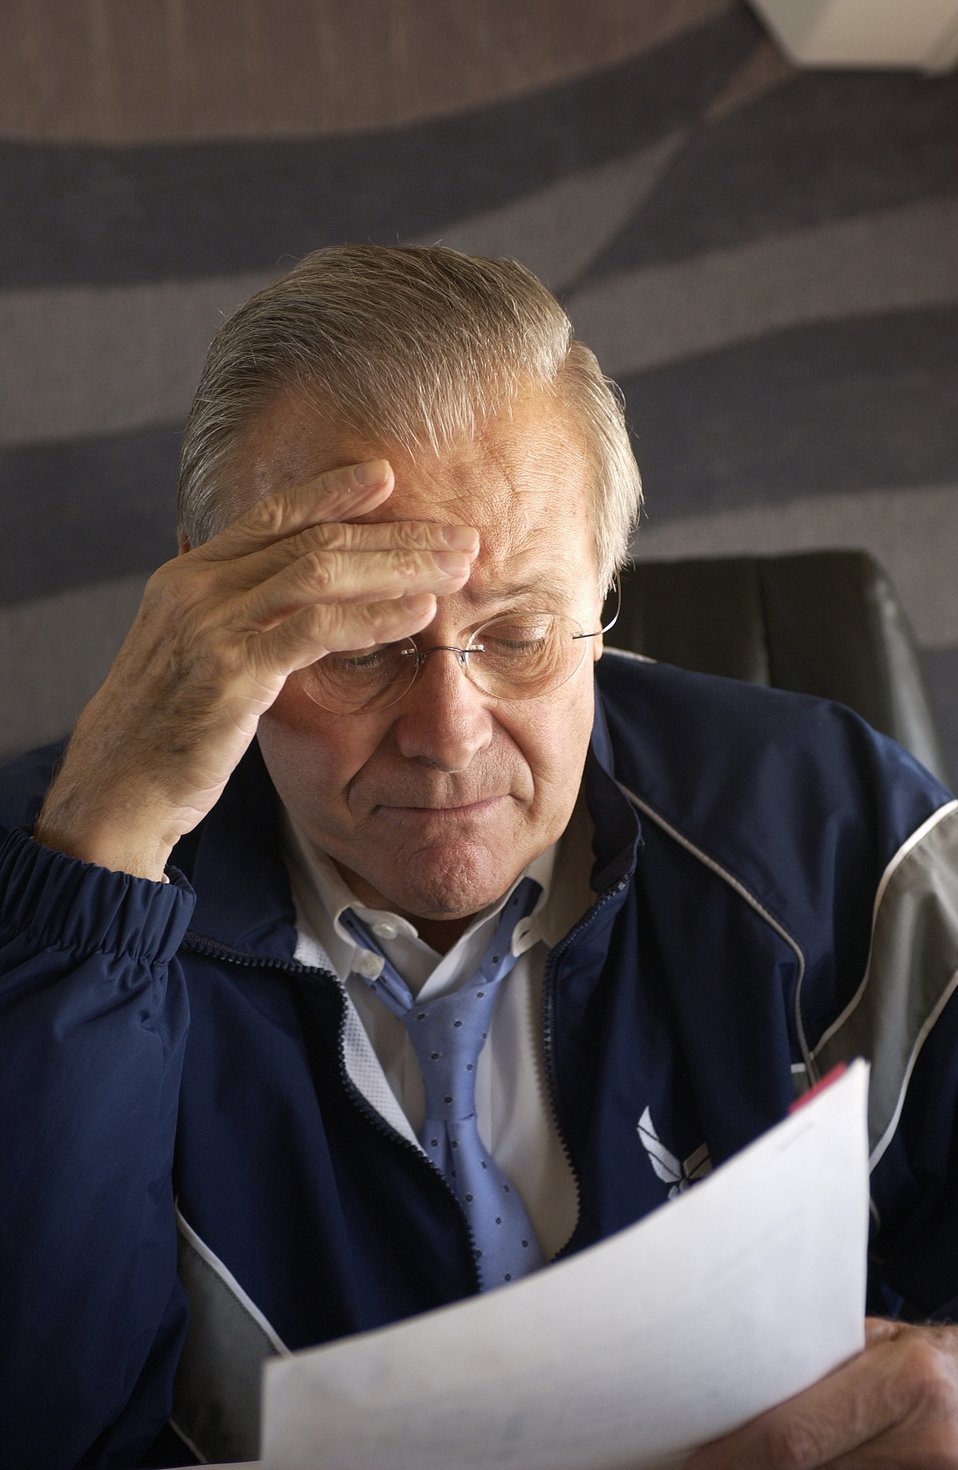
Daily plan

MACDILL AIR FORCE BASE, Fla. -- Defense Secretary Donald H. Rumsfeld reviews his daily itinerary while traveling to this base Oct. 11 aboard a C-40 aircraft. The secretary went to MacDill to visit servicemembers and the staff at U.S. Central Command and U.S. Special Operations Command.